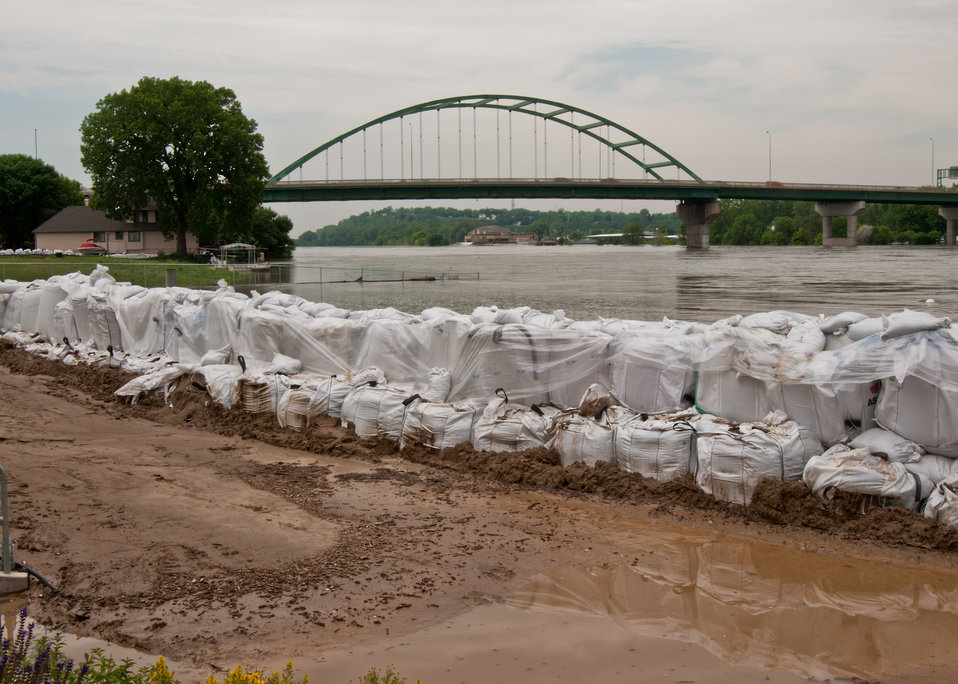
Sand bags along the Missouri River near the Marina Inn, South Sioux City, Nebraska, on Friday, June 17, 2011.. The Missouri river has flooded hundreds of acres in Nebraska and Iowa. Agriculture Secretary Tom Vilsack visited the area along the Missouri River which included stops South Sioux City, Nebraska and Glenwood, Iowa. Secretary Vilsack met with the producers and community leaders is to get a firsthand look to gain the information necessary to better deliver disaster programs expeditiously to effectively respond to this disaster. The visits provided the information necessary for United States Department of Agriculture agencies to producers as they assess recovery efforts in rural areas reeling from a natural disaster. USDA and the entire federal family have been working with state and local officials to provide relief to residents, farmers, ranchers and businesses.